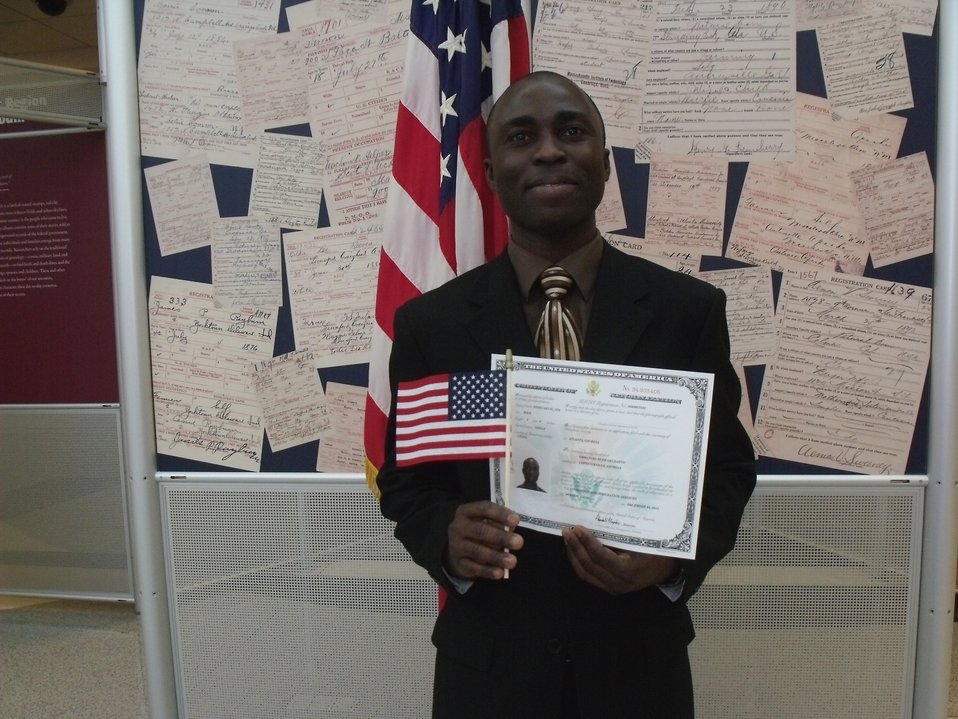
New Citizens